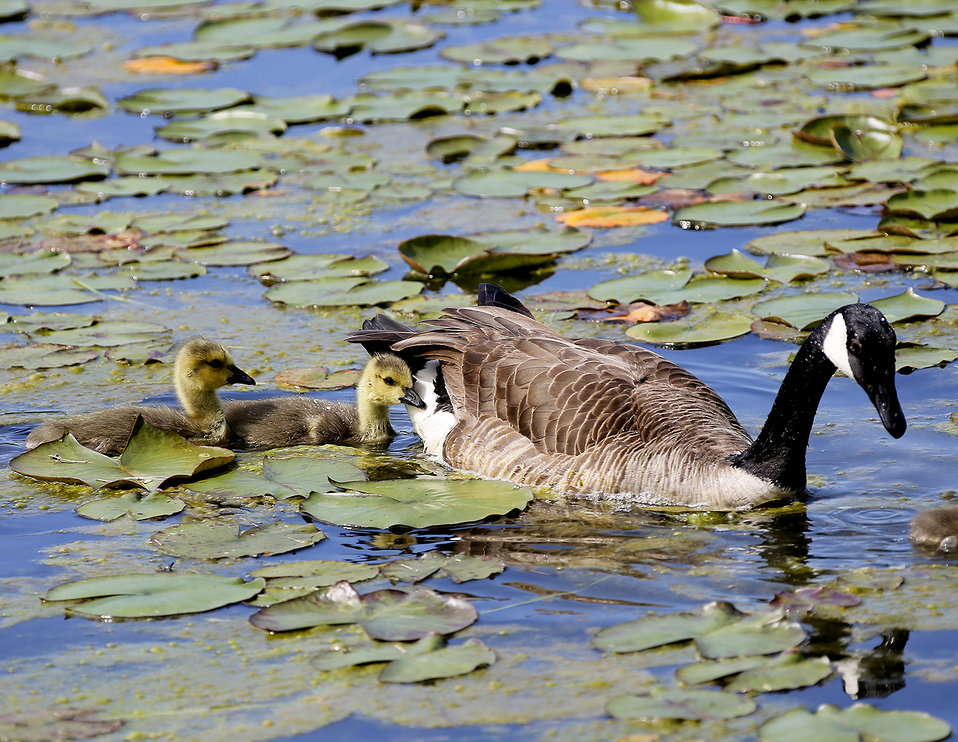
Canada goose and goslings at Oak Ridge National Laboratory.